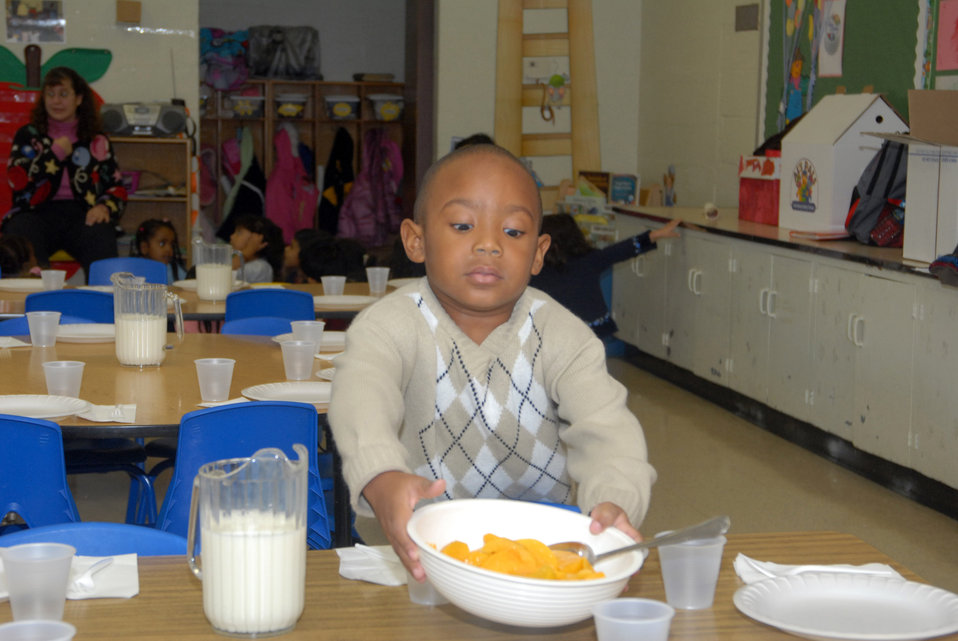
Youngsters at the Higher Horizons Day Care Center in Bailey Crossroads, VA., receive healthy food and snacks on October 25, 2006 under the U.S. Department of Agriculture (USDA) Food Nutrition Service’s (FNS) Child and Adult Care Food Program (CACFP) and Head Start program. CACFP plays a vital role in improving the quality of day care for children and elderly adults by making care more affordable for many low-income families. Each day, 3.2 million children receive nutritious meals and snacks through CACFP.